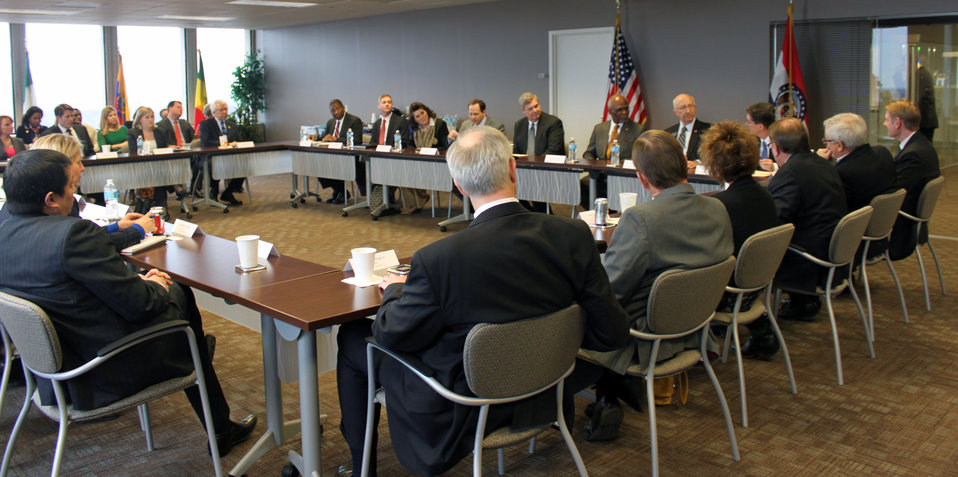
Agriculture Secretary Tom Vilsack hosts a White House Business Council roundtable discussion with business executives, local elected officials and community leaders in St. Louis, MO on Thursday, Jan. 30, 2014. The panel discussed how President Obama is moving the U.S. economy forward and Secretary Vilsack highlighted the role record agricultural exports continue to play in our nation’s economic recovery. The period 2009-2013 stands as the strongest five-year period for agricultural exports in America’s history.